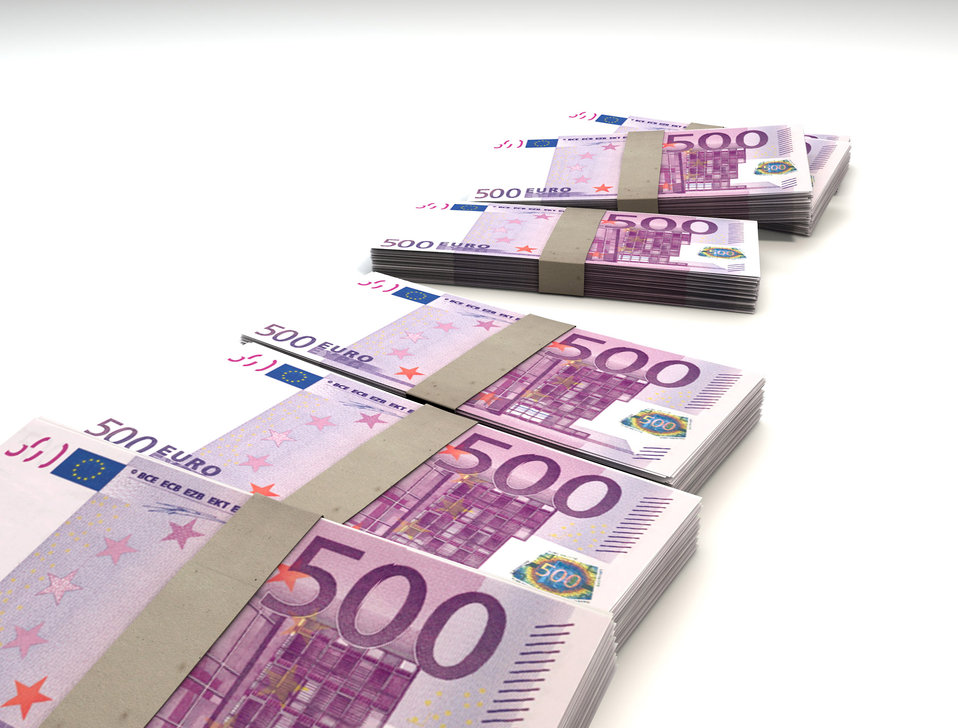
Euro 500

500 euro currency in the form of a track.